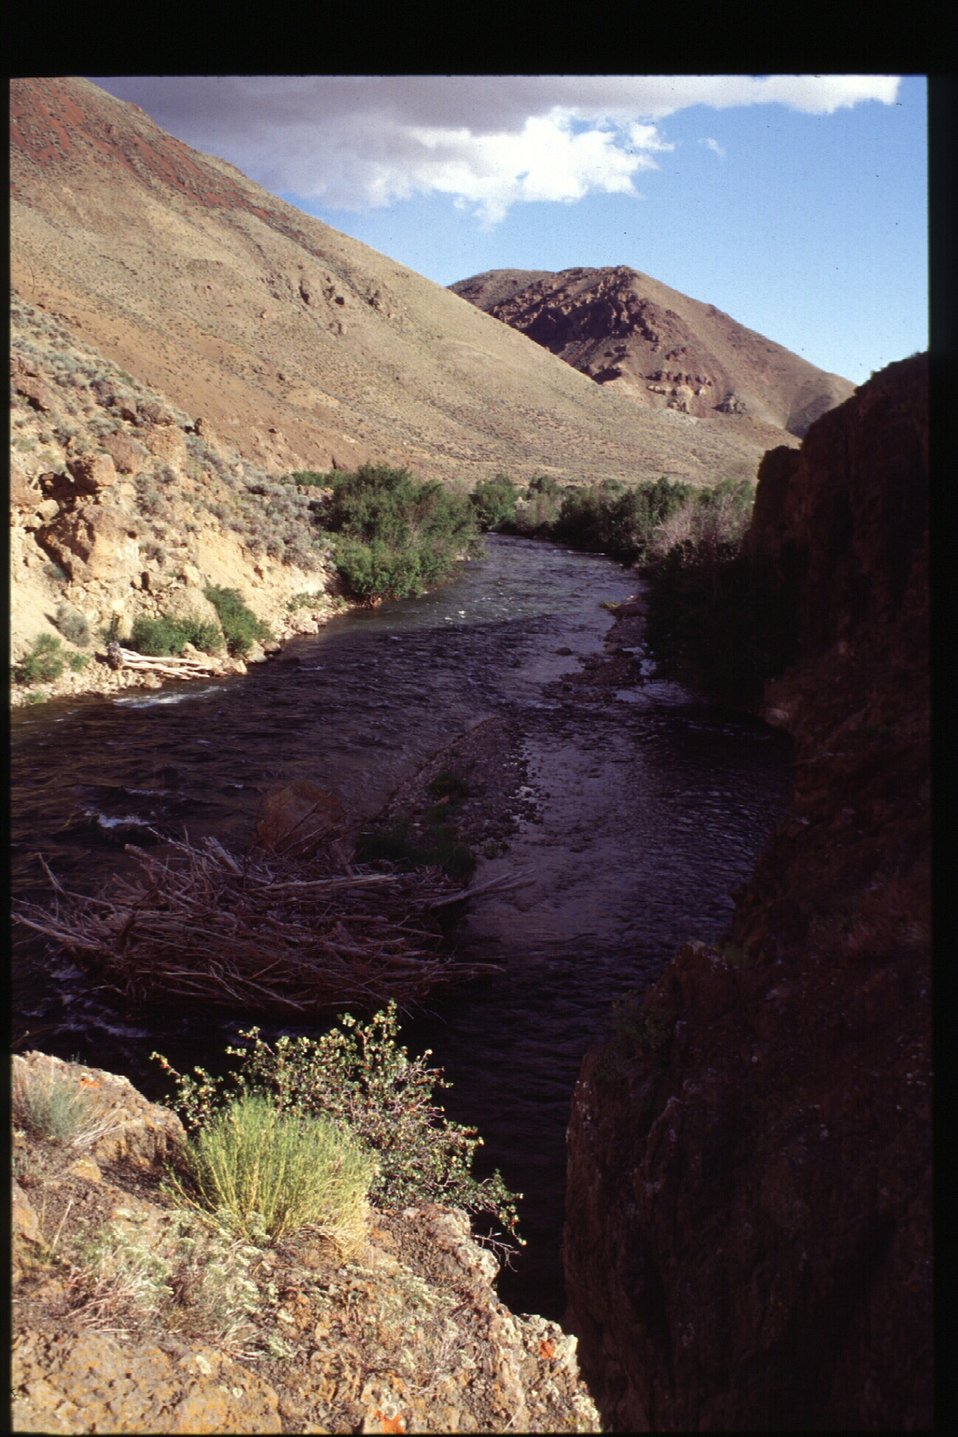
Scenics Salmon Field Office UCSC Upper Columbia Salmon Clearwater District